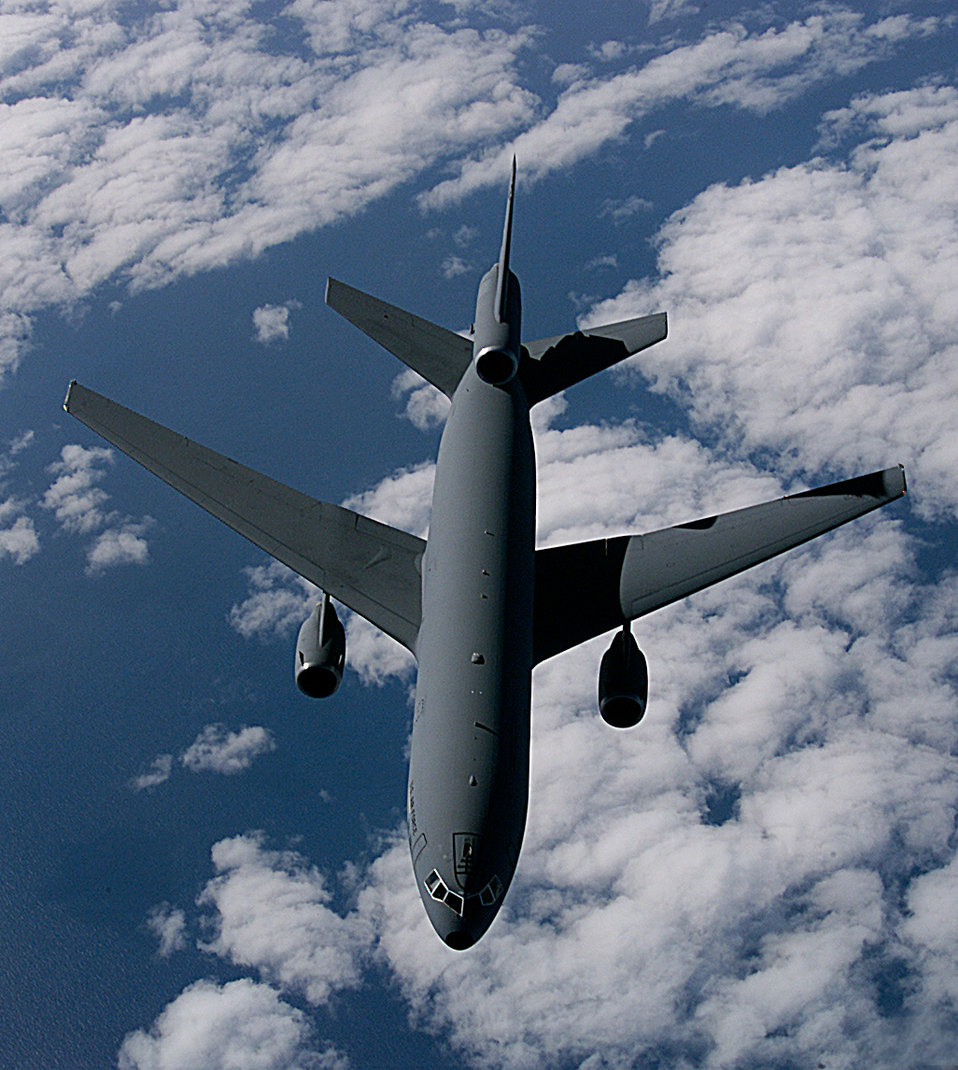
Extender flight

FILE PHOTO -- A KC-10 Extender from the 349th Air Mobility Reserve Wing, Travis Air Force Base, Calif., is on approach to be refueled for the kickoff of Air Mobility Rodeo 2000.